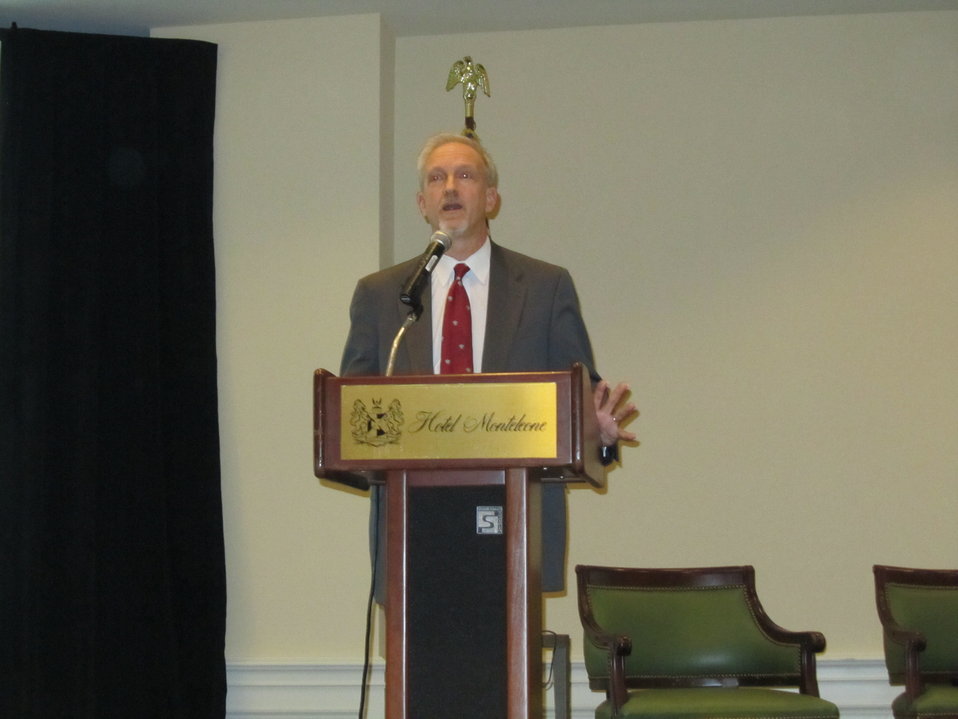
10th Intergovernmental Meeting

EM Acting Assistant Secretary Dave Huizenga spoke with state and local officials from the State of Tennessee as part of the 10th Intergovernmental Meeting in New Orleans in December 2011.